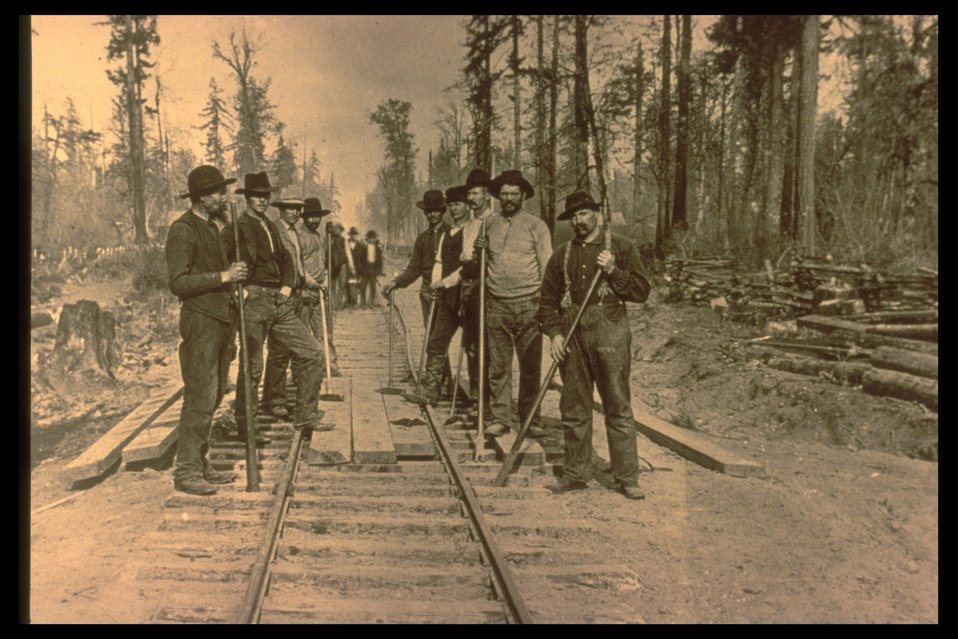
Black and white photo of a railroad work gang posing alonkg the tracks.